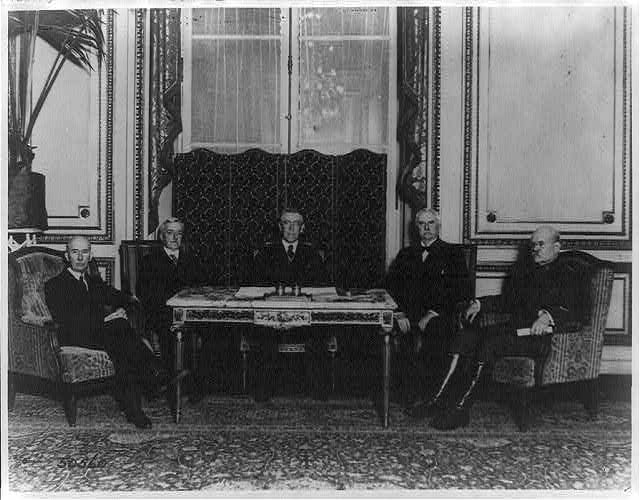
Secretary Lansing at the Paris Peace Conference

Secretary of State Robert Lansing(second from left) at the Paris Peace Conference with President Woodrow Wilson, Colonel E.M. House, Henry White, and General Tasker H. Bliss. 12/18/18